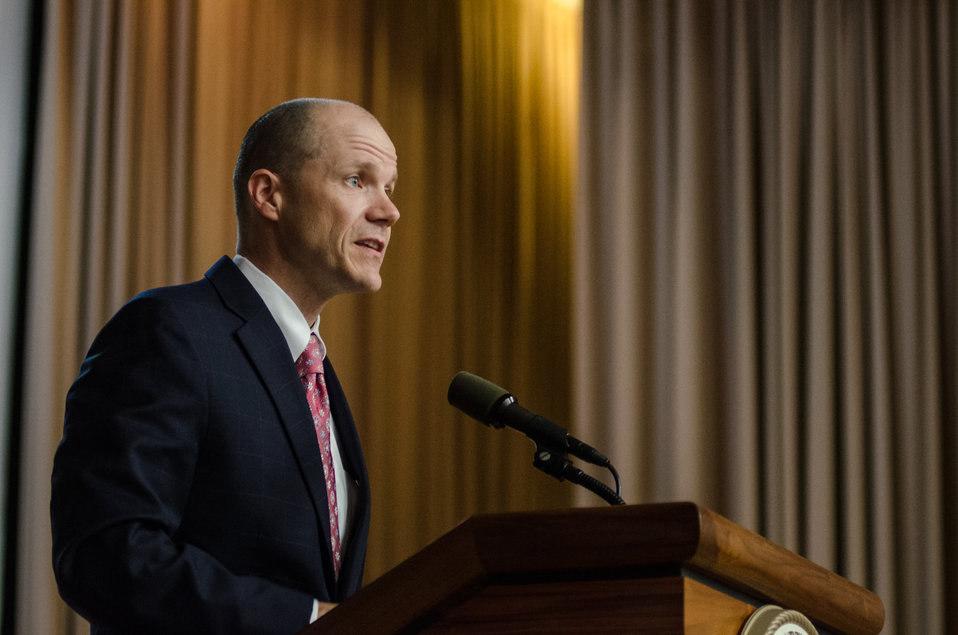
U.S. Department of Agriculture (USDA) Rural Development’s (RD) Acting Under Secretary Doug O'Brien speaks at the 2nd Annual Cultural Transformation kickoff opening ceremony and forums, themed “Employees Influencing Change,” on Tuesday, Aug. 13, 2013 at USDA in Washington, D.C.